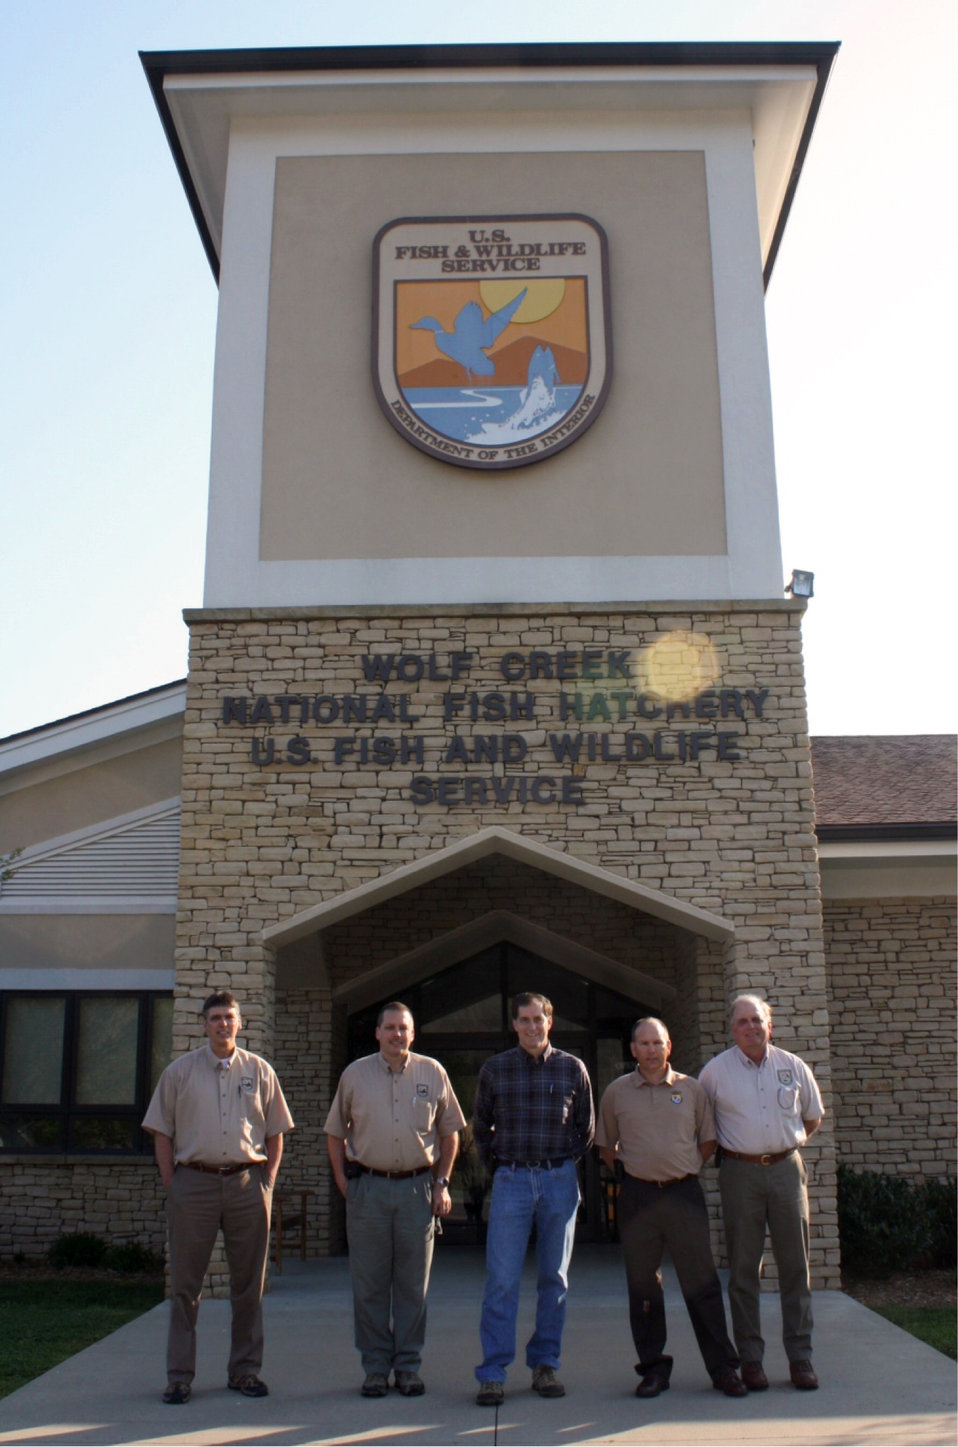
Dan Ashe visits Wolf Creek National Fish Hatchery

KDFWR Fisheries Director Ron Brooks, KDFWR Commissioner Jon Gassett, Director Ashe, Project Leader James Gray, KDFWR Deputy Commissioner Benjy Kinman.